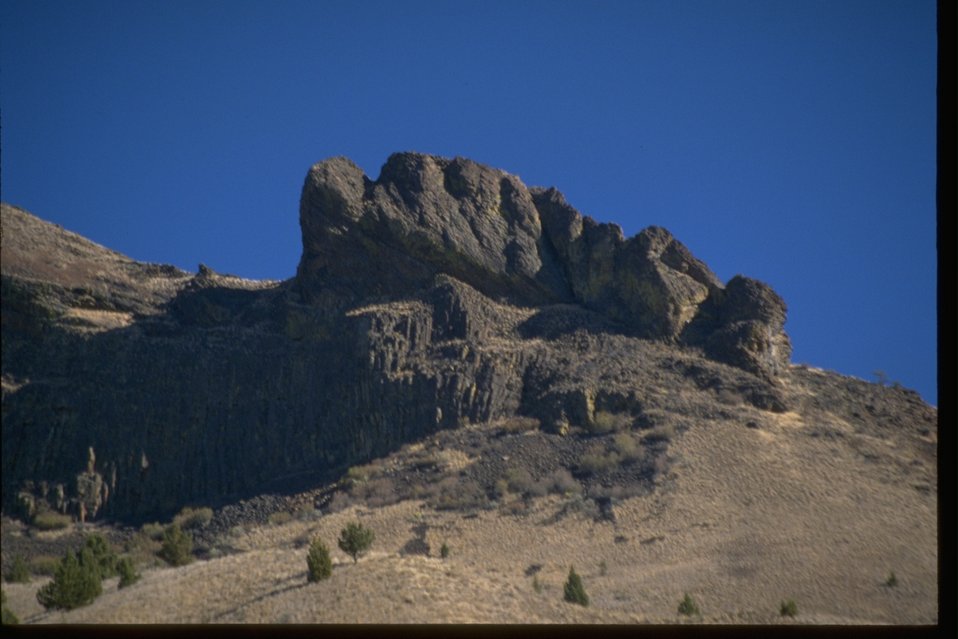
Sleeping Indian peak above the John Day River.